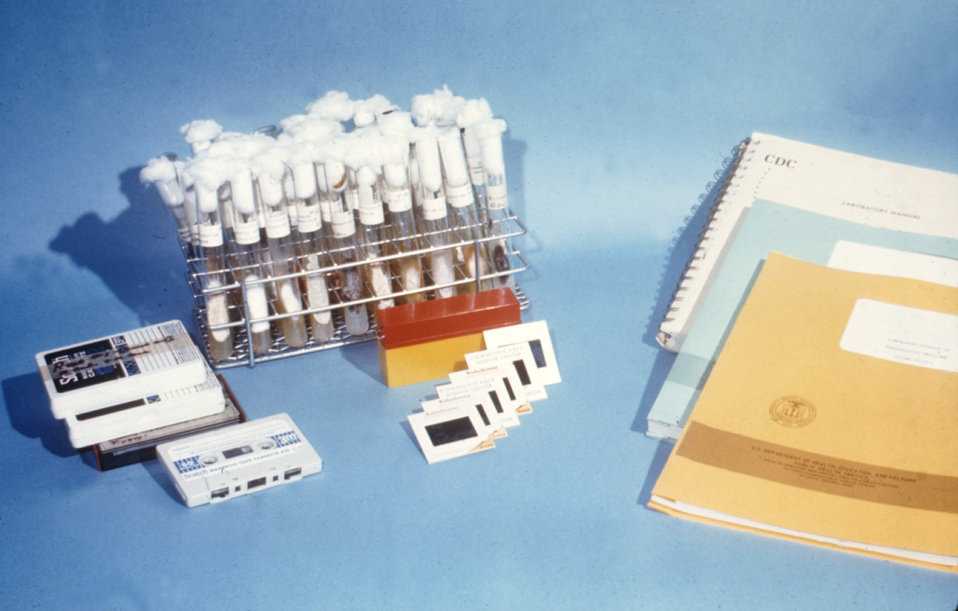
This 1970 photograph depicts a mycology lab training kit containing stock cultures, audio tapes, 2 X 2 slides, and manuals.